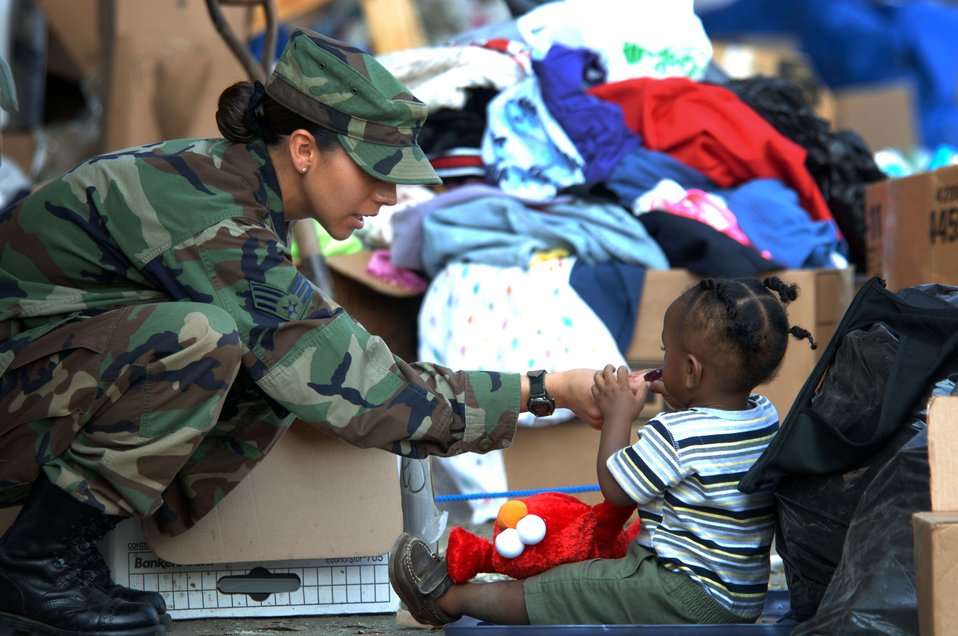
Sorting things out

BILOXI, Miss. -- Senior Airman Aidaliz Lagueux takes a moment from her volunteer work to offer 11-month-old Nasier Dixon a lollipop at a donation center here. Airman Lagueux is a personnel specialist from the 305th Mission Support Squadron at McGuire Air Force Base, N.J. She is deployed to nearby Keesler Air Force Base supporting the base's hurricane recovery operation.